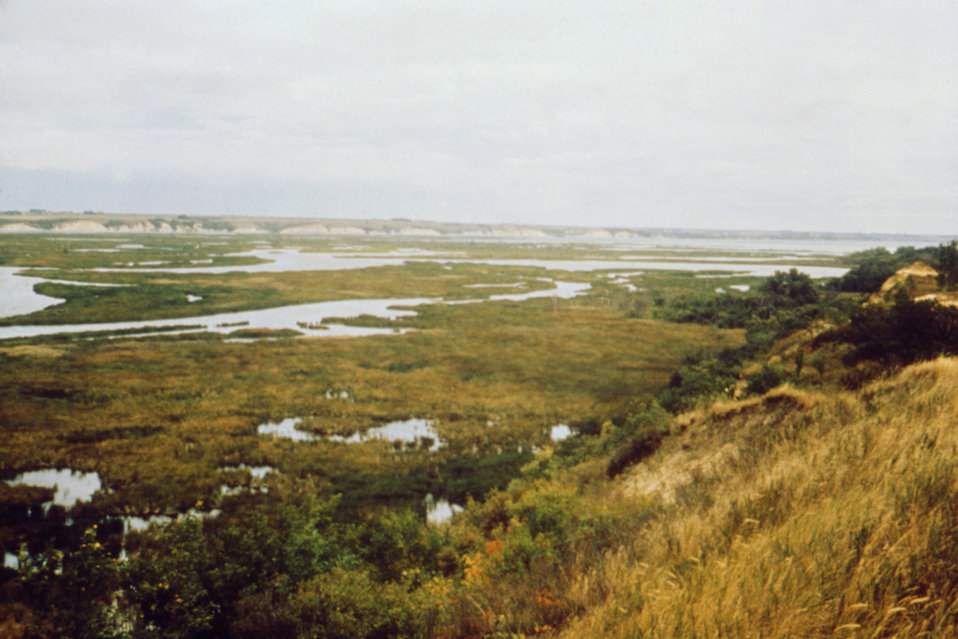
These bluffs overlook Lewis and Clark Lake in Santee, Nebraska, and were shot during a CDC vector-borne disease investigation.